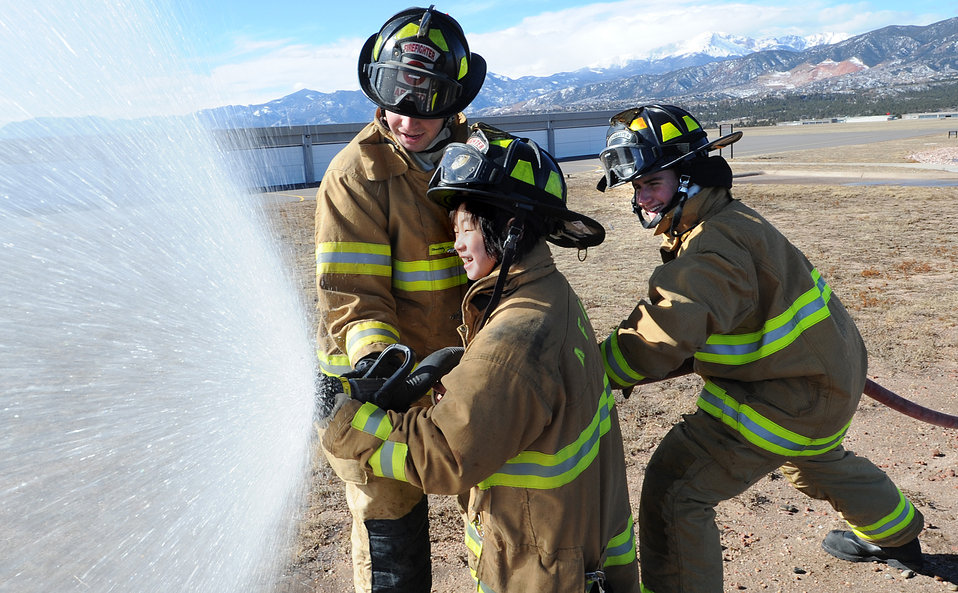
Academy cadets host cadet for a day

Airmen 1st Class Jacob Frey and Travis Oster show Cadet for a Day Kai Rackley how to operate a fire hose at the U.S. Air Force Academy March 5, 2010. Kai, who is 10, was diagnosed with leukemia in 2007 and has been in remission for a year. Airmen Frey and Oster are firefighters with the 10th Civil Engineer Squadron.